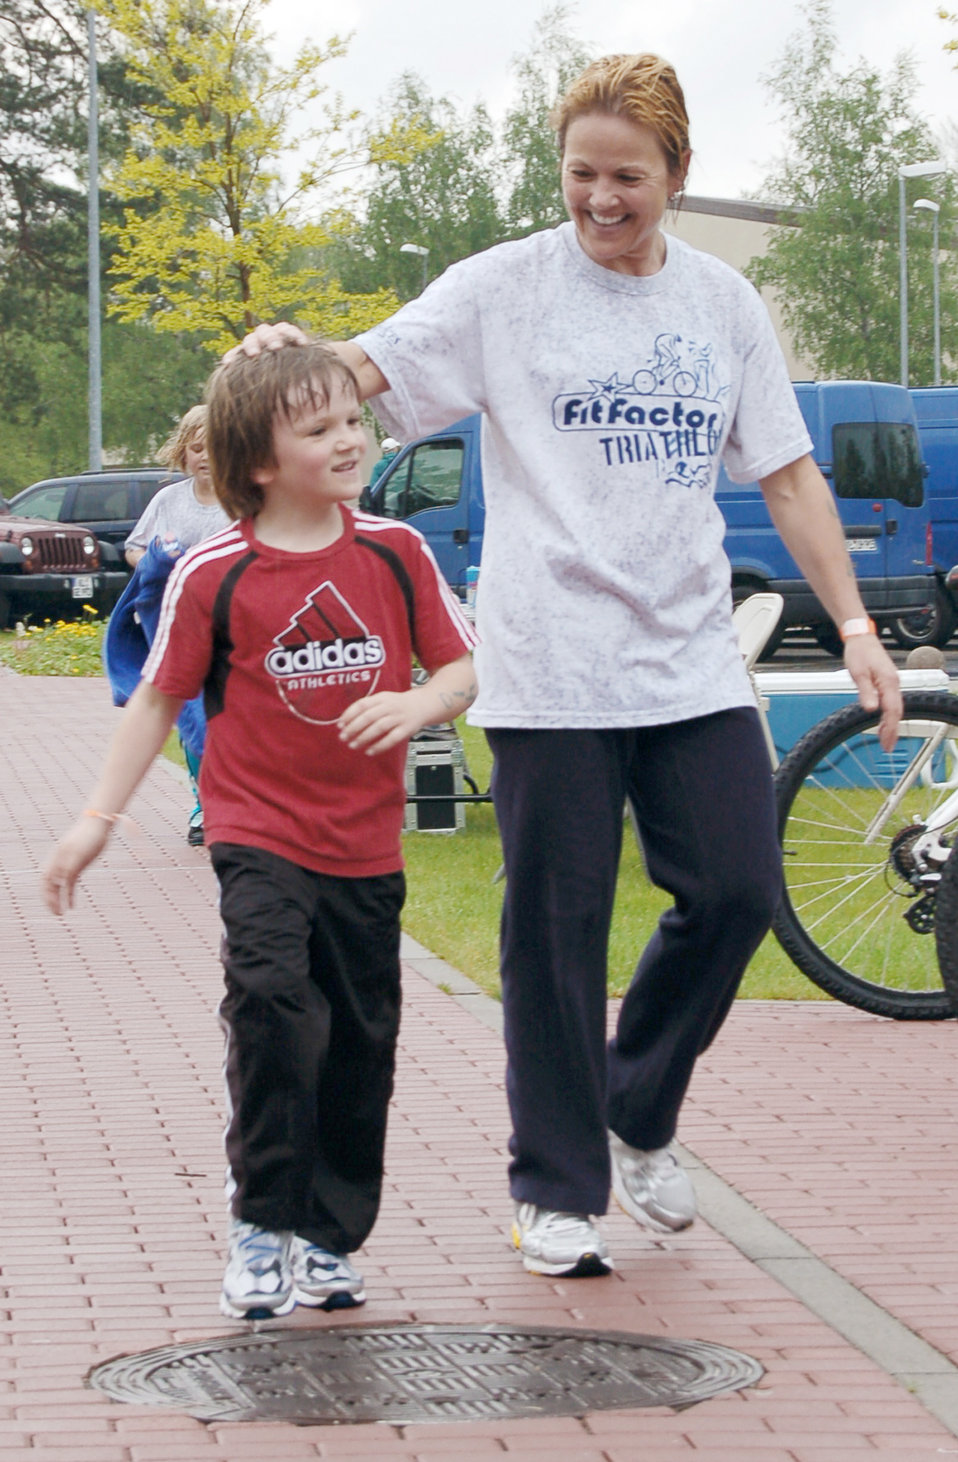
Triathlon kicks off fitness month, brings families together

Laura Mitvalsky congratulates her son Eric Echtermeyer, 6, after completing the running portion of the second annual FitFactor Triathlon May 2, 2010, at Ramstein Air Base, Germany. Ms. Mitvalsky and her two children called themselves